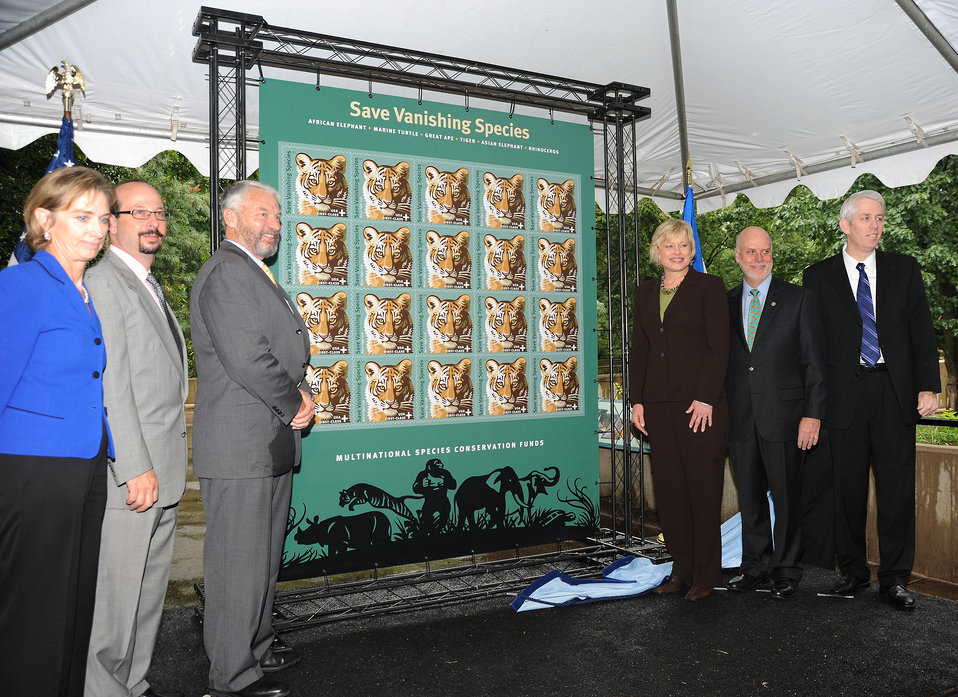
Save Vanishing Species Stamp First Day of Issue